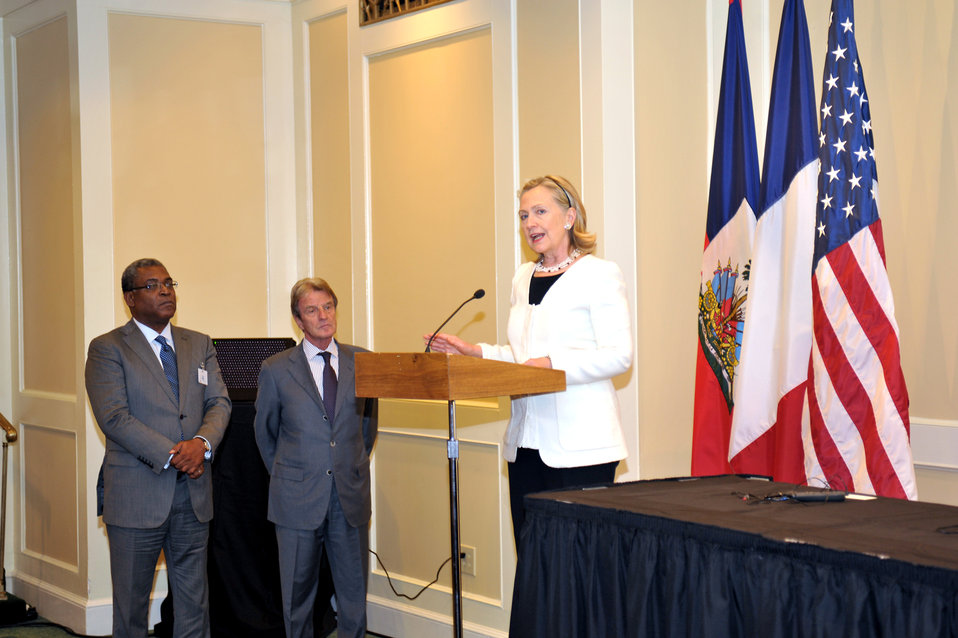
Secretary Clinton Delivers Remarks on Haiti Reconstruction

U.S. Secretary of State Hillary Rodham Clinton delivers remarks on Haiti reconstruction efforts after signing an MOU with Haitian Prime Minister Jean-Max Bellerive (far left) and French Foreign Minister Bernard Kouchner (second from left), committing to cooperate with the Government of Haiti in the reconstruction and expansion of the Hopital Universitaire d’Etat d’Haiti at the InterContinental Hotel in New York, New York, on September 20, 2010.